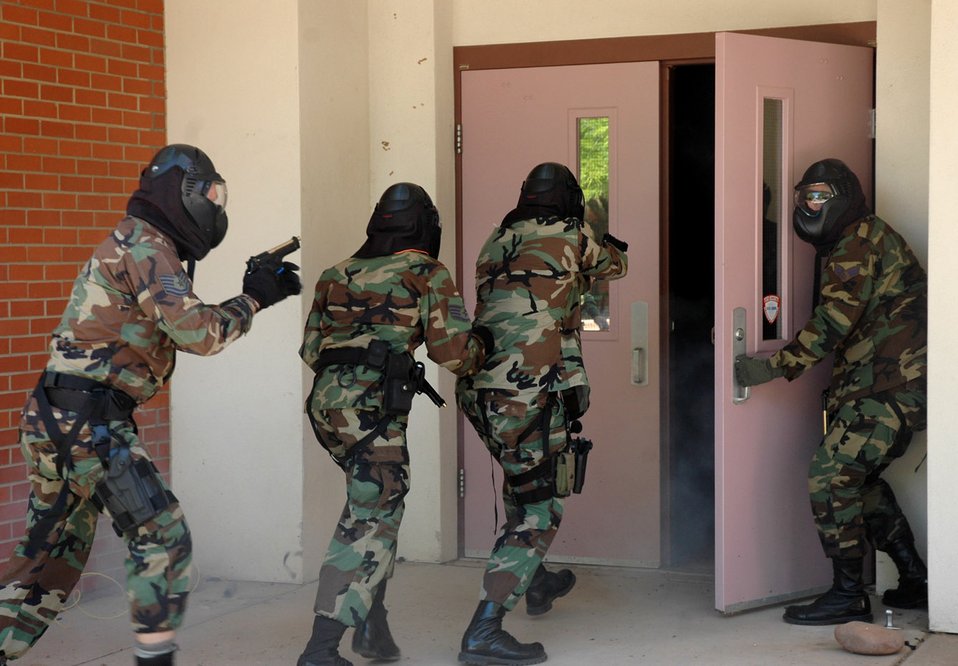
Security forces join SWAT training exercise

Senior Airman Brian Batema (right) holds the door open for Staff Sgt. Joshua Sharloken, Staff Sgt. Waylon Mitchell and Tech. Sgt. Jeff Ward during a security exercise conducted by Tucson Police Department special weapons and tactics team trainers April 25 at a local middle school. The Airmen, from the 355th Security Forces Squadron at nearby Davis-Monthan Air Force Base, joined members of several local law enforcement agencies to train on how to respond to an armed assailant at a school.